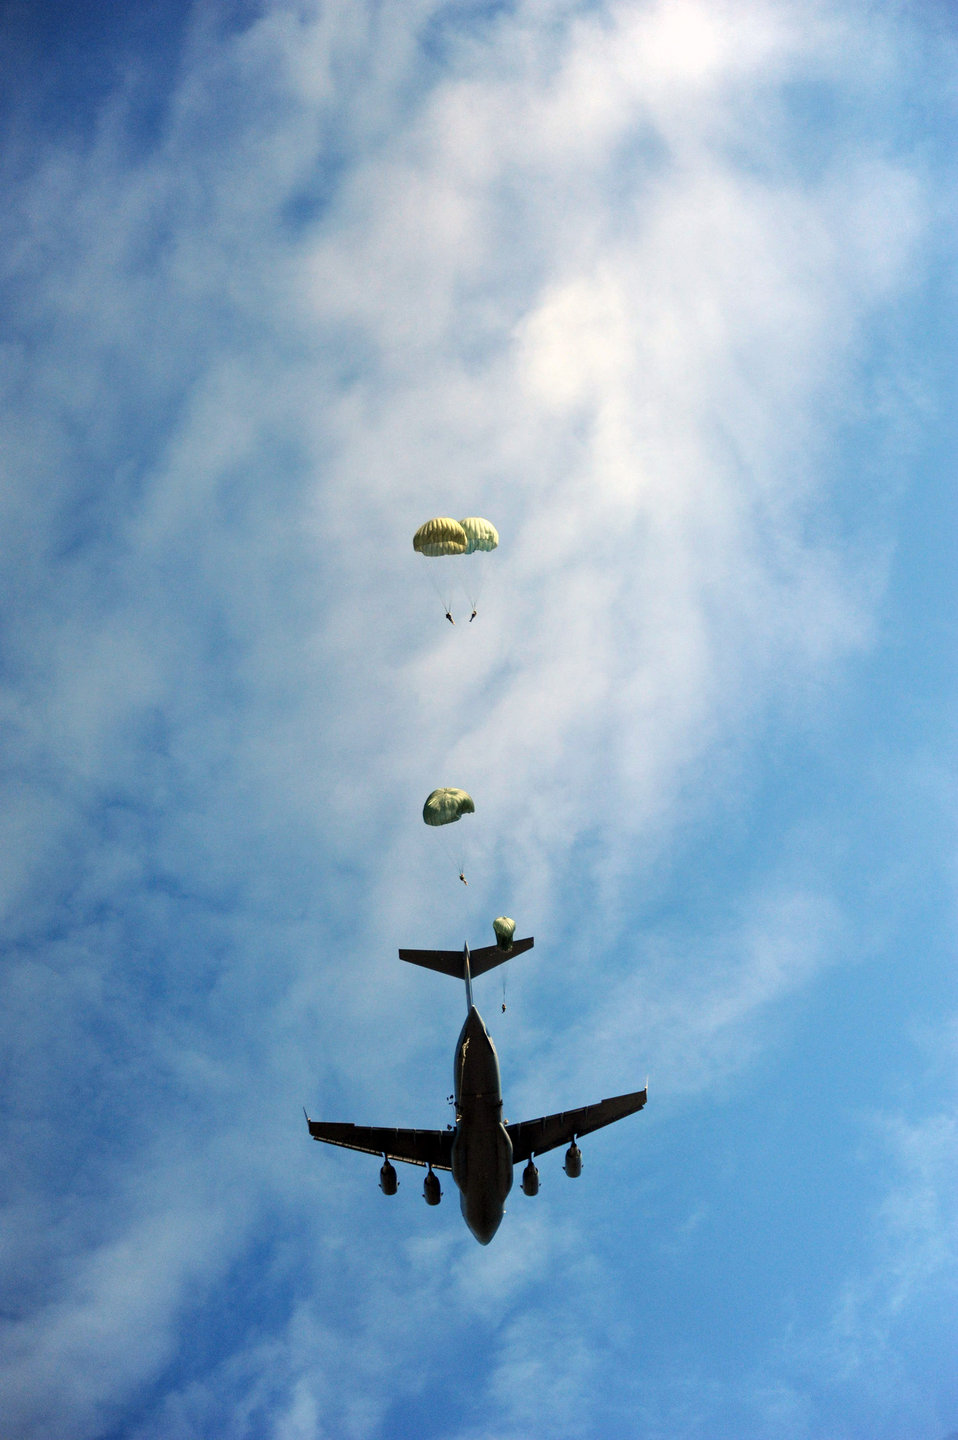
Hickam supports 507th Airborne school at Fort Benning, GA

Paratroopers from the 507th Airborne School fall from the sky over Fort Benning, Ga., Oct. 14, 2010, after jumping out of a C-17 Globemaster from the 535th Airlift Squadron at Joint Base Pearl Harbor-Hickam, Hawaii. A C-17 aircrew from the 15th Wing flew from Hawaii to Fort Benning to support the student jump requirements of the 507th AS.